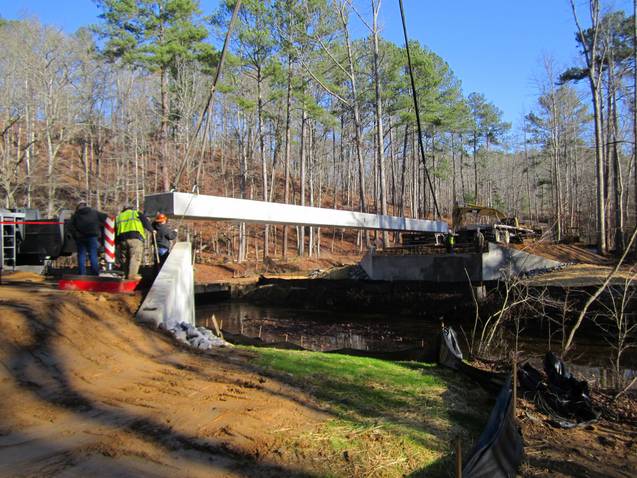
pine glen one

Construction crew sets the first of six box beams for the new Pine Glen Bridge on the Talladega National Forest near Helflin, AL in 2011. The project employs local community workers who built the bridge, which will help to improve habitat for fish and other aquatic organisms, reduce sediment deposits in the local streams and rivers, and improve access for visitors.